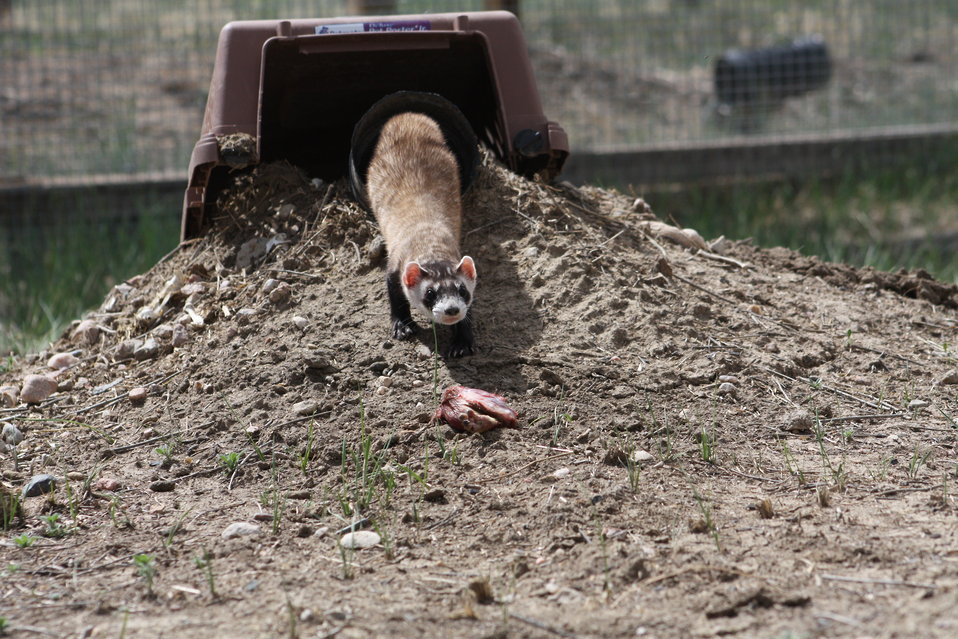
Interns visit the NBFFCC

In the summer of 2012, USFWS Region 6 interns visited the National Black-footed Ferret Conservation Center (NBFFCC) in Colorado to learn how the program reintroduces the endangered Black-footed ferret back into its native habitat.